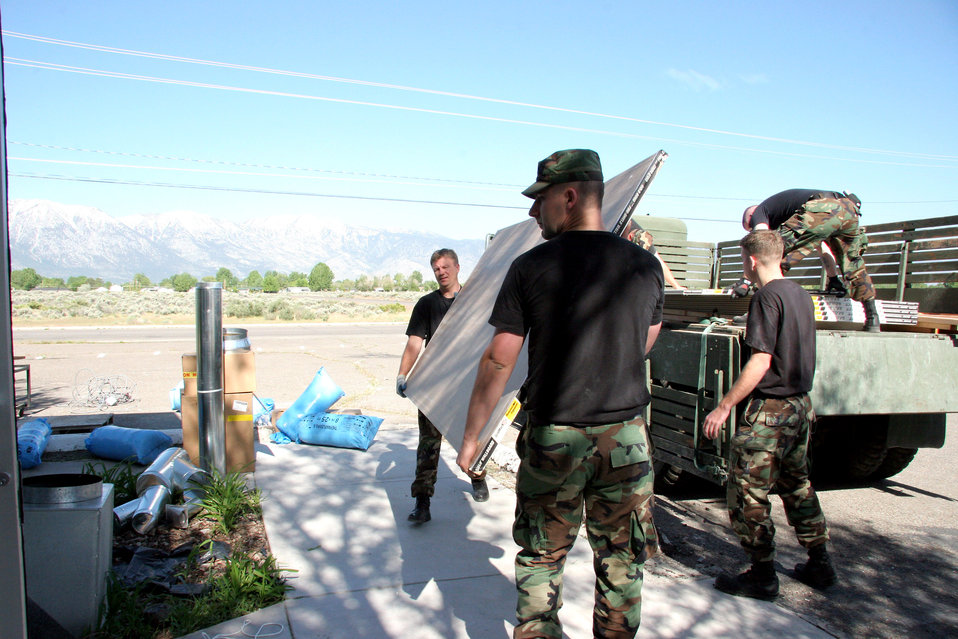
939 Washoe IRt

Senior Master Sgt. Steve Watson and Airman 1st Class Jason Jackson carry sheet rock into an old store being converted into a wellness center for the Washoe American-Indian Tribe as part of an Air Force Reserve Command innovative readiness training program near Carson City, Nev. May 16, 2006. Sergeant Watson is a utilities superintendent. Airman Jackson is a utilities apprentice. Both are with the 939th Civil Engineer Squadron.